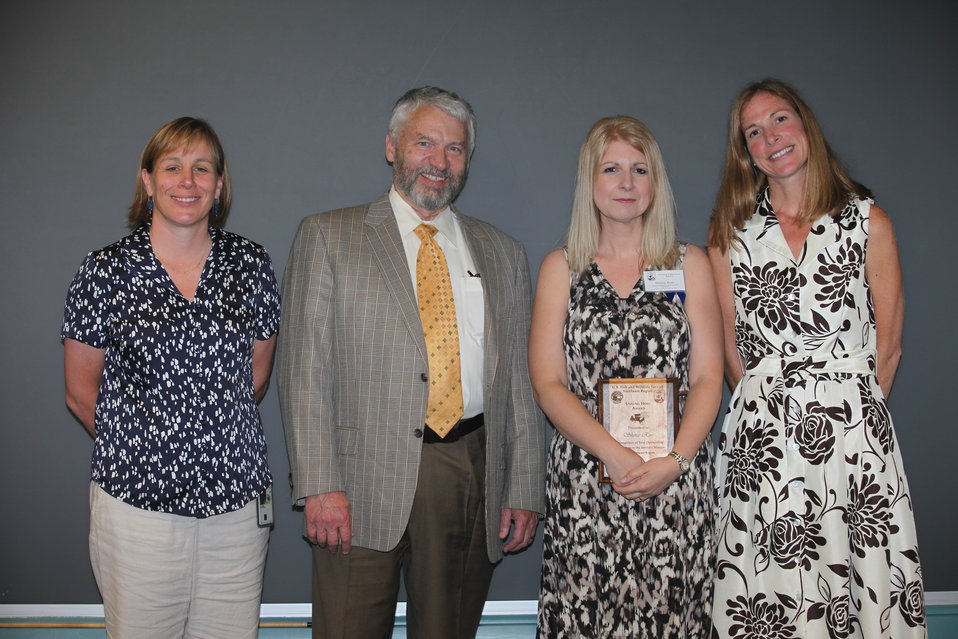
Sheree Ross of the Southern New England - New York Bight Coastal Program recieved a Region 5 Unsung Hero Award.
From left to right: Deputy Regional Director Deb Rocque, Deputy Director Rowan Gould, Laura Perlick, and Regional Director Wendi Weber